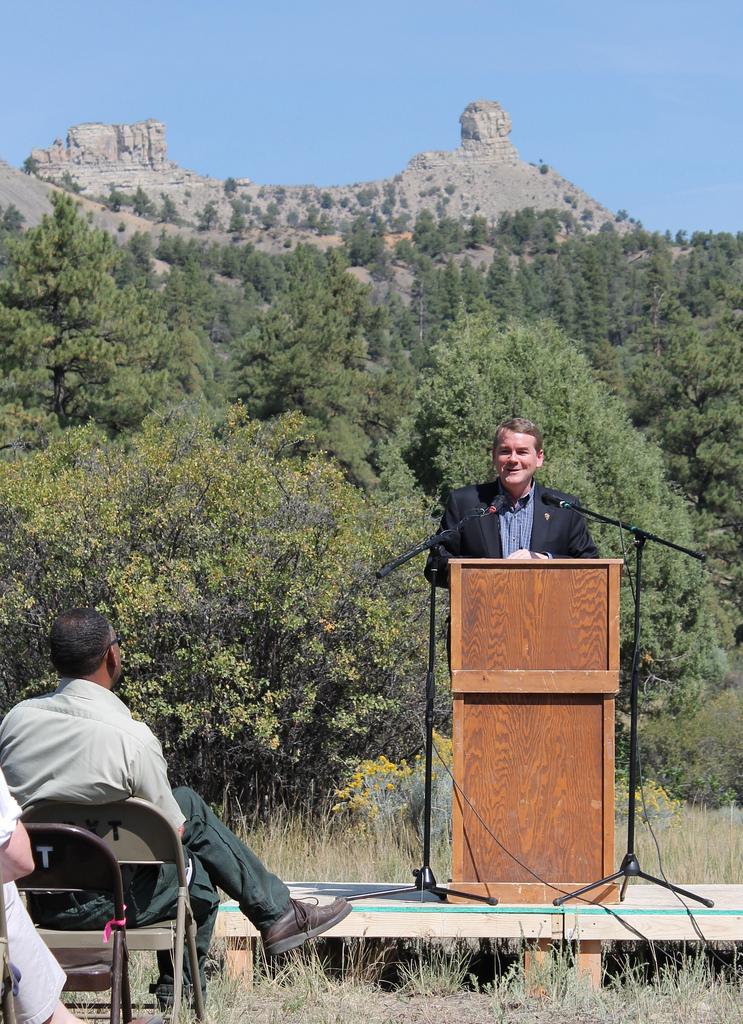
Senator Michael Bennet (CO) speaks at the dedication of Chimney Rock as a National Monument in the San Juan National Forest in Southwest Colorado on Friday, Sept. 21, 2012. Chimney Rock is of great spiritual importance to Pueblos and other Tribes in the southwest corner of Colorado. With its twin sandstone pillars and its massive Chaco- style masonry walls perched 1,000 feet above the Piedra River Valley the monument protects a landscape important to the continuation of traditional cultural practices of the modern Puebloan Indians.